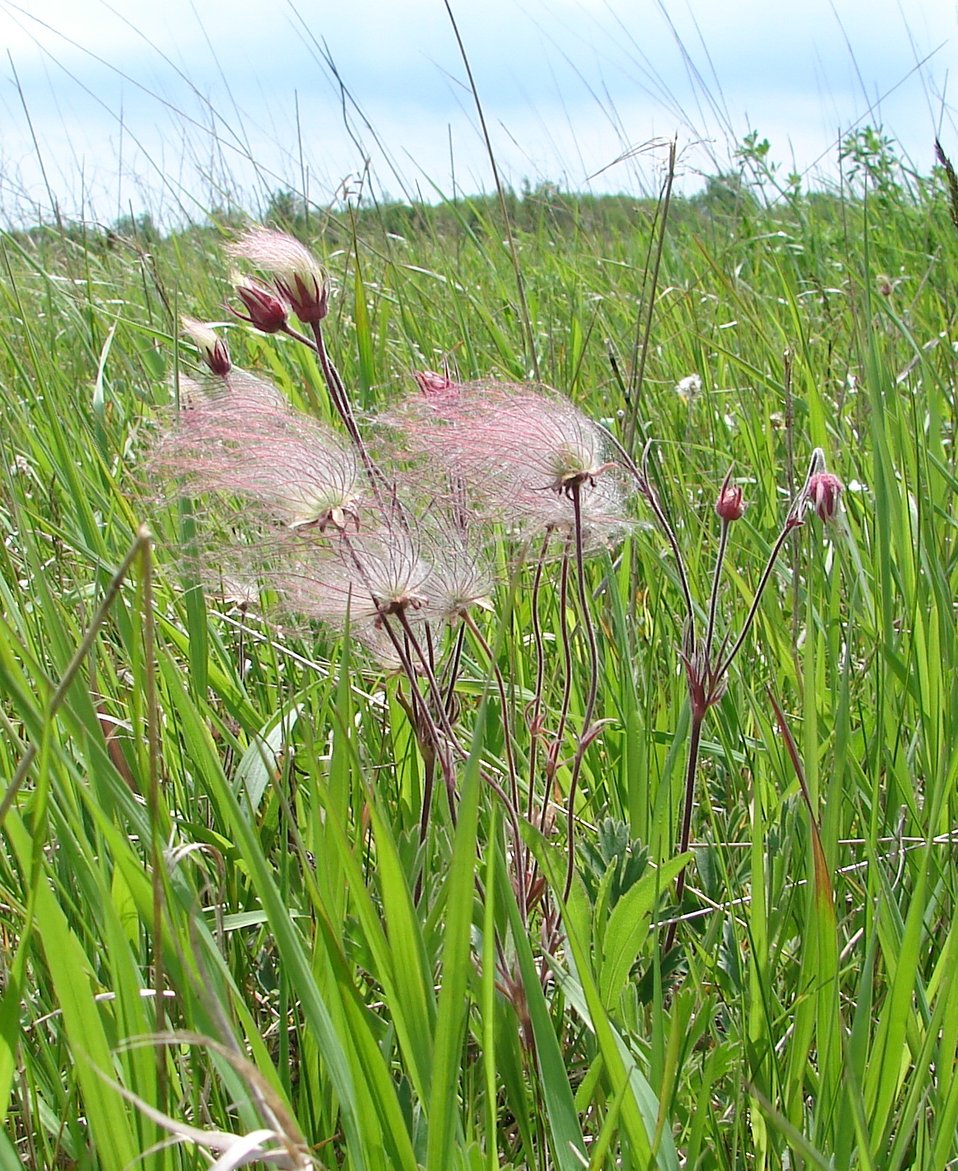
Prairie Smoke is a native wildflower commonly found in the Prairie Pothole region of the Northern Great Plains.

Credit: Jennifer Briggs / USFWS

Photo Contest Entry #115